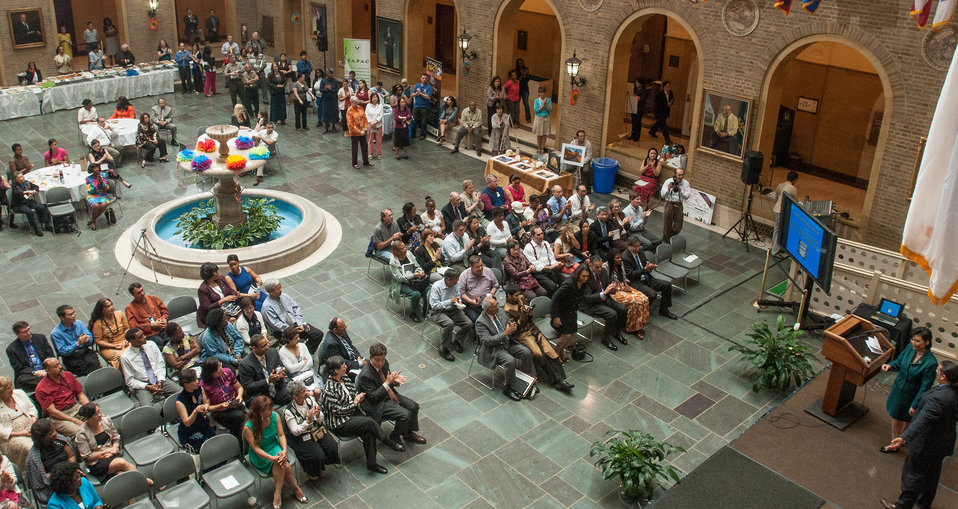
U.S. Representative Judy Chu (CA) speaks during the U.S. Department of Agriculture (USDA) Asian Pacific American Heritage Month Observance, at the USDA headquarters in Washington, D.C., on Thursday, May 23, 2013. This year’s theme is “Building leadership; Embracing the Cultural Values and Inclusions.”